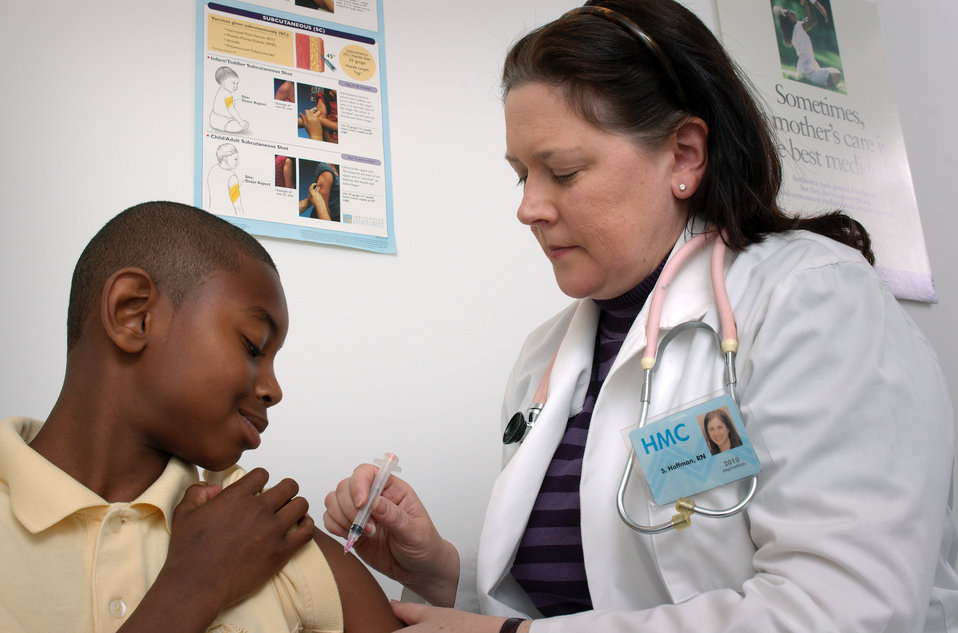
The nurse in this 2006 image was in the process of administering an intramuscular injection into the left shoulder muscle of this 13-year old boy. He was assisting in the injection by holding up his shirt sleeve in order to expose the immunization site.